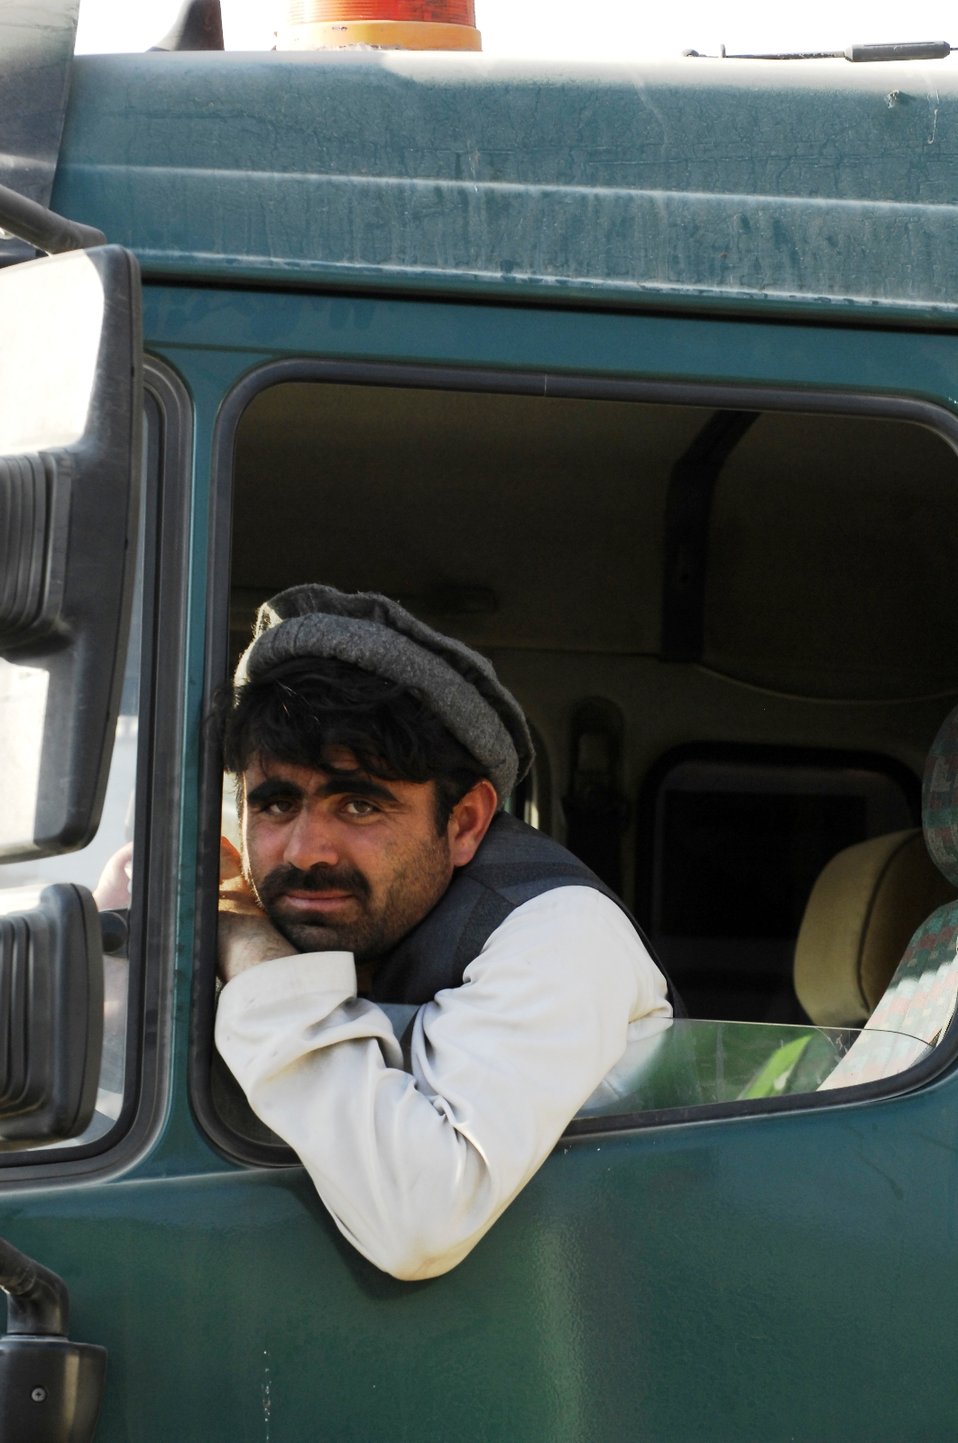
Care73